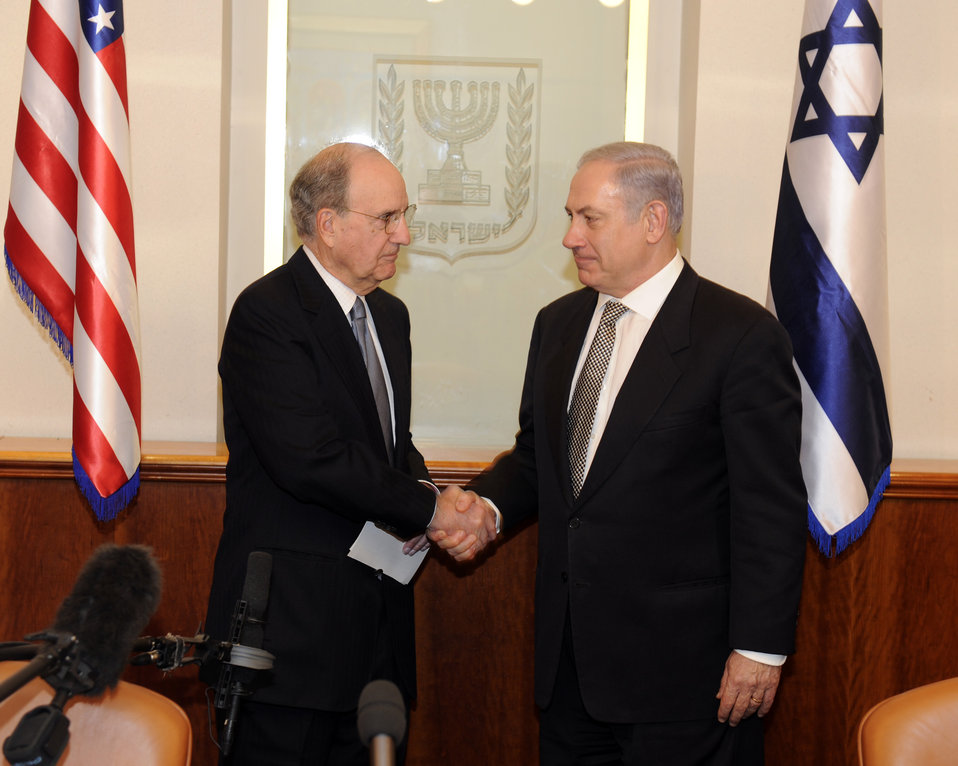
Special Envoy Mitchell Shakes Hands With Israeil Prime Minister Netanyahu

U.S. Special Envoy for Middle East Peace George J. Mitchell shakes hands with Israeli Prime Minister Benjamin Netanyahu at the Prime Minister's office in Jerusalem on December 13, 2010.